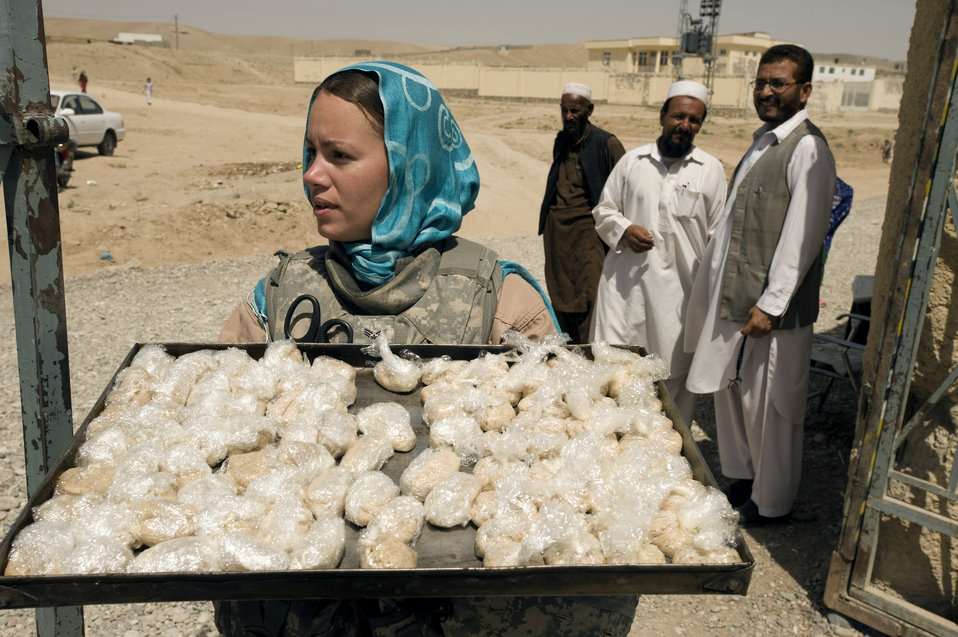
Zabul team combats malnutrition, unsafe water

In Qalat, Afghanistan, Senior Airman Felicita Torres-Perkins carries a tray of food supplements for severely malnourished children into the Qalat Hospital Aug. 10. The Zabul Provinicial Reconstruction Team is working with local heath officials to combat the causes of the high infant mortality rate such as unsanitary water supplies and malnutrition. She is deployed from McGuire Air Force Base, N. J., and wears the scarf in an effort to honor the customs of this region of the country.